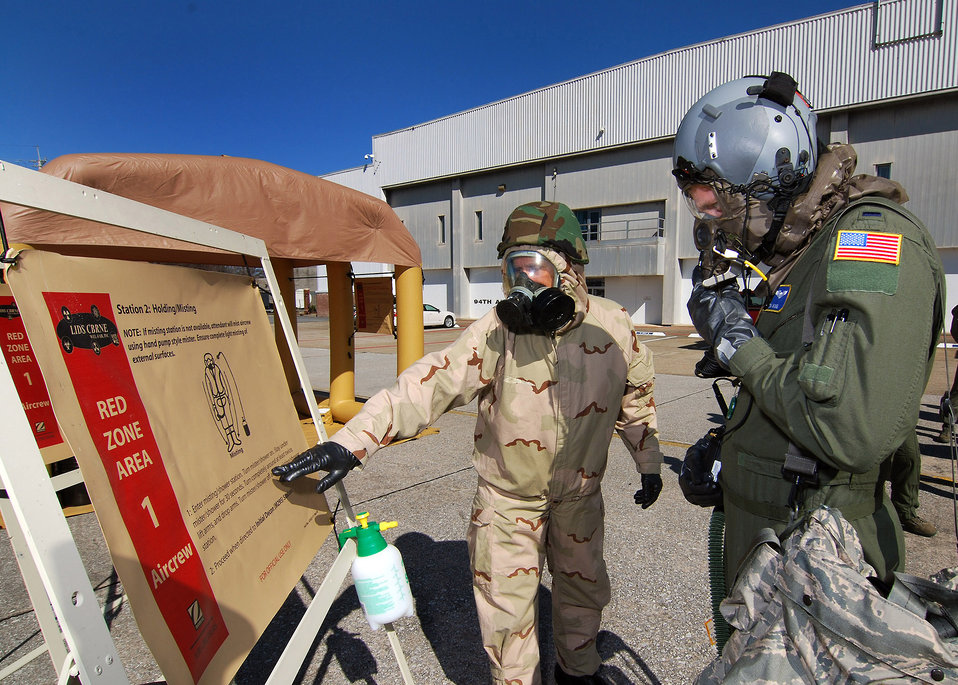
Aircrew Decontamination Training

Tech Sgt. Lance Wilson (left) briefs 1st Lt. Seth King on decontamination station procedures during decontamination training Feb. 6, 2011, at Dobbins Air Reserve Base, Ga. Sergeant Wilson is an aircrew flight equipment technician. Lieutenant Croasdale is a 700th Airlift Squadron pilot.